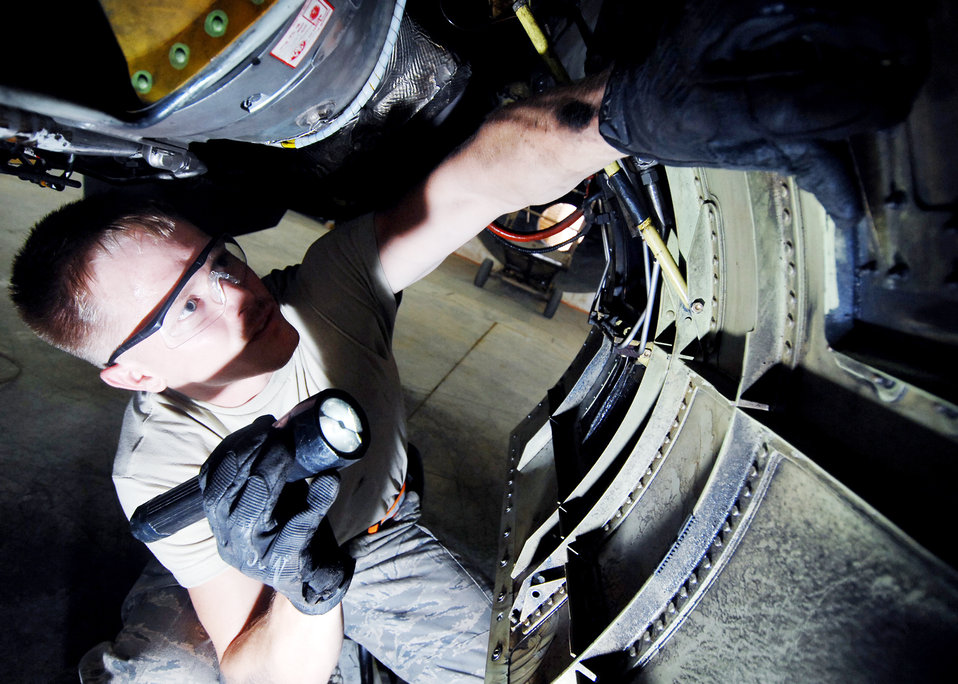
Balad maintainers keep F-16s flying

Airman Travis Sharp inspects the lower fuselage of an F-16 Fighting Falcon at Joint Base Balad, Iraq, Oct. 20, 2009. Airman Sharp is a crew chief with the 332nd Expeditionary Maintenance Squadron.